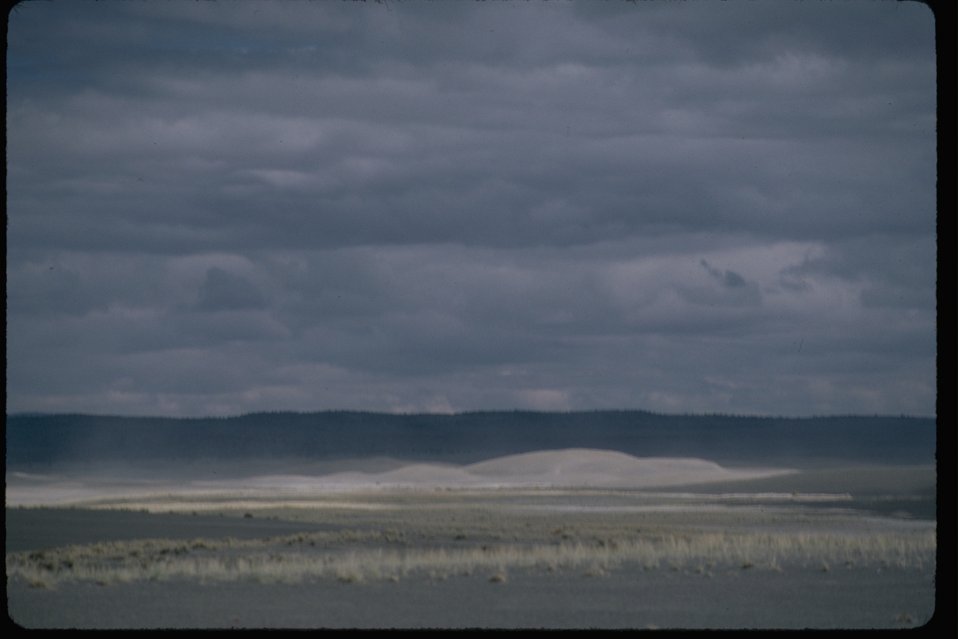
Sand Dunes Wilderness Study Area. OR 1-24